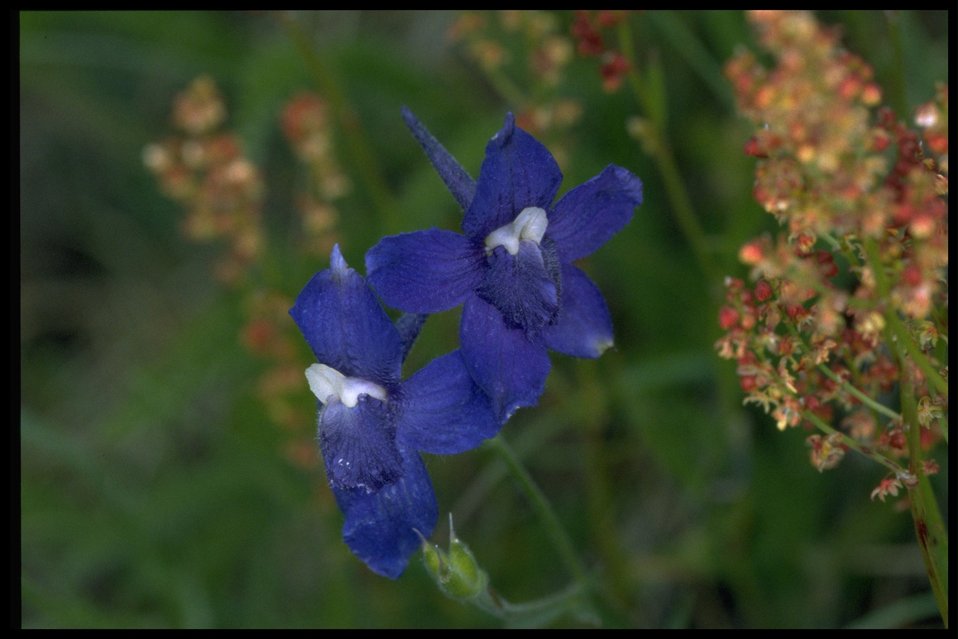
Medium shot of Delphinium and Rumex acetosella.